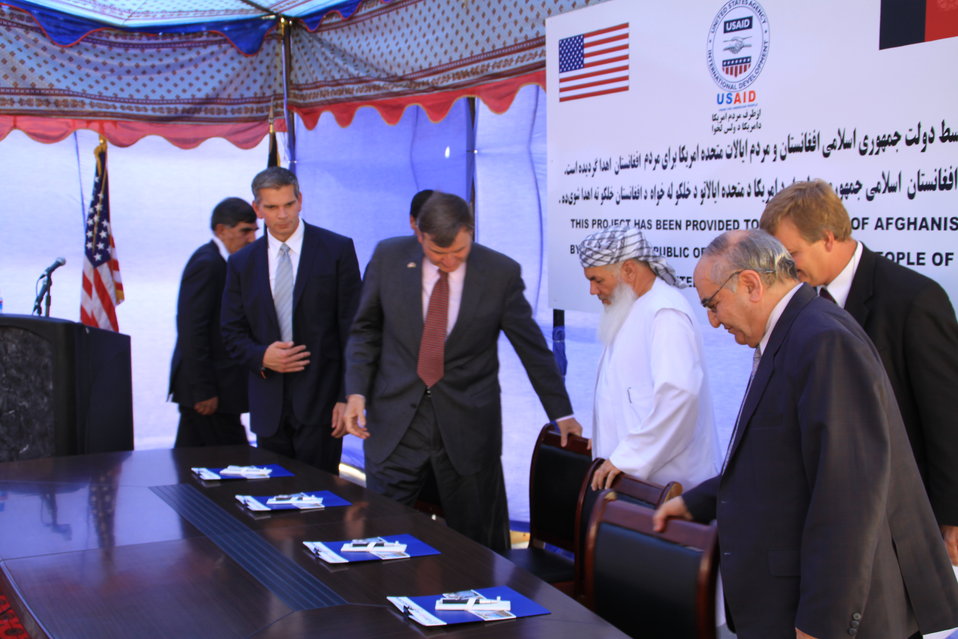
105 MW Tarakhil Power Plant Handover